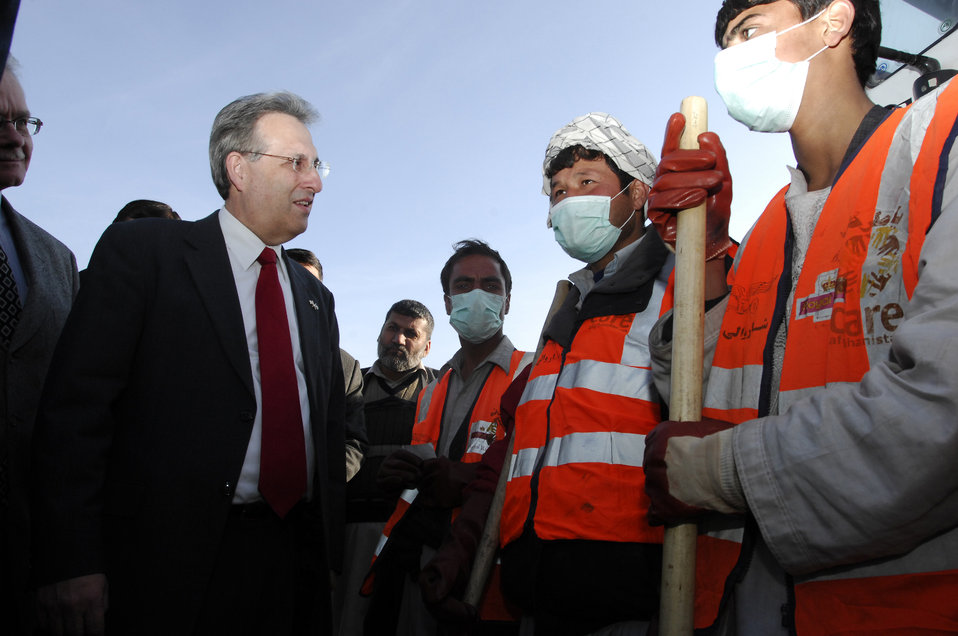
Care82